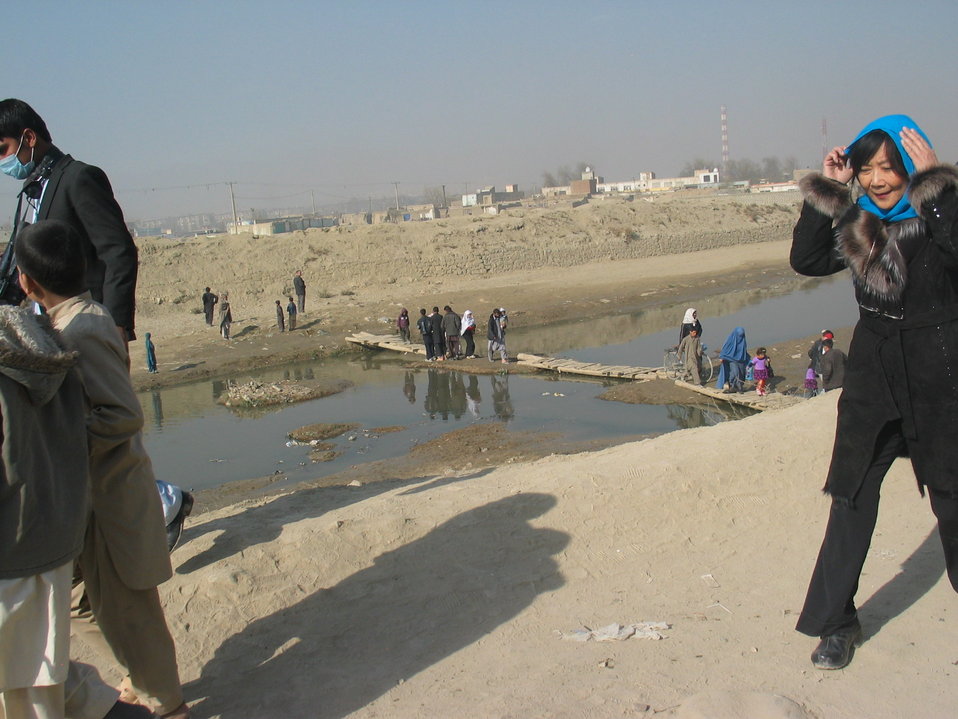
Kabul River Bridge Renovation, December 3, 2010